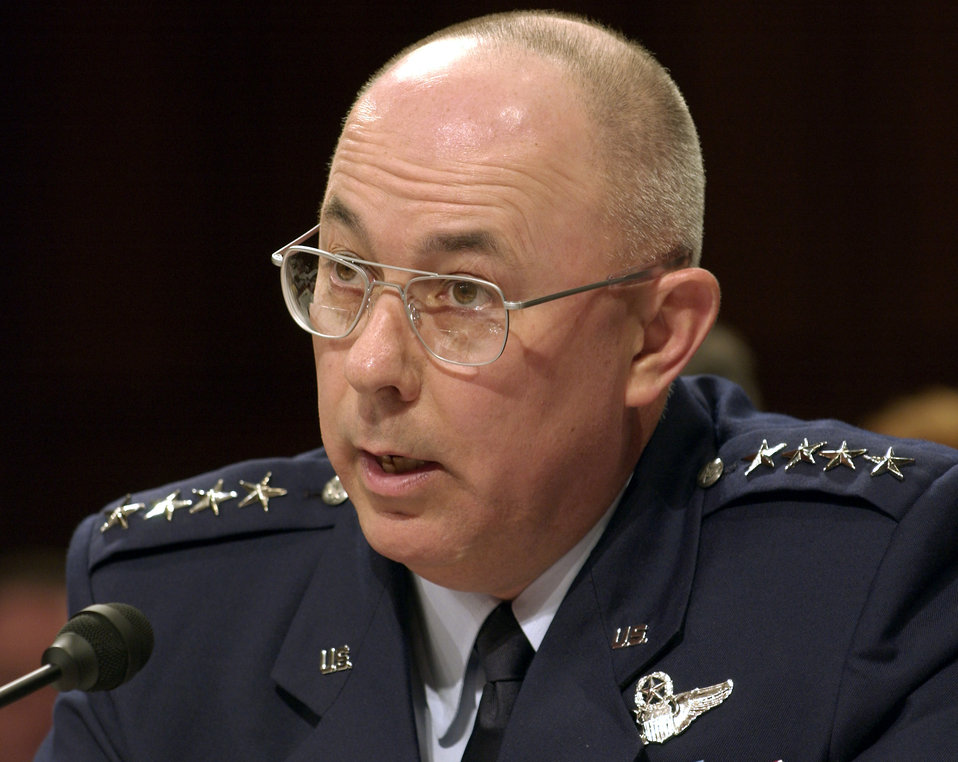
Senate Armed Services testimony

WASHINGTON -- Air Force Vice Chief of Staff Gen. T. Michael Moseley answers questions during a hearing of the Senate Armed Services Subcommitee on Personnel about the Air Force's policies and programs for preventing and responding to incidents of sexual assault.